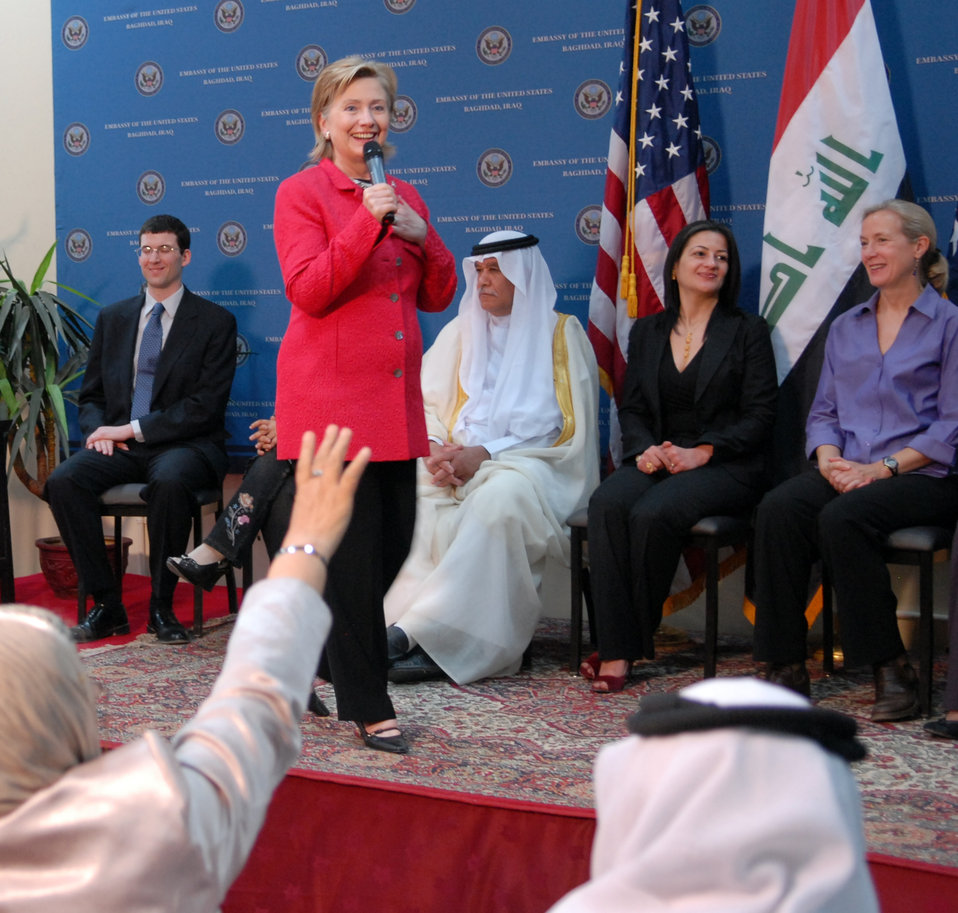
Secretary Clinton Town Hall Meeting in Baghdad

U.S. Secretary of State Hillary Rodham Clinton conducts a town hall meeting with Iraqis and Provincial Reconstruction Team (PRT) staff, taking questions from the audience in Baghdad, Iraq April 25, 2009.